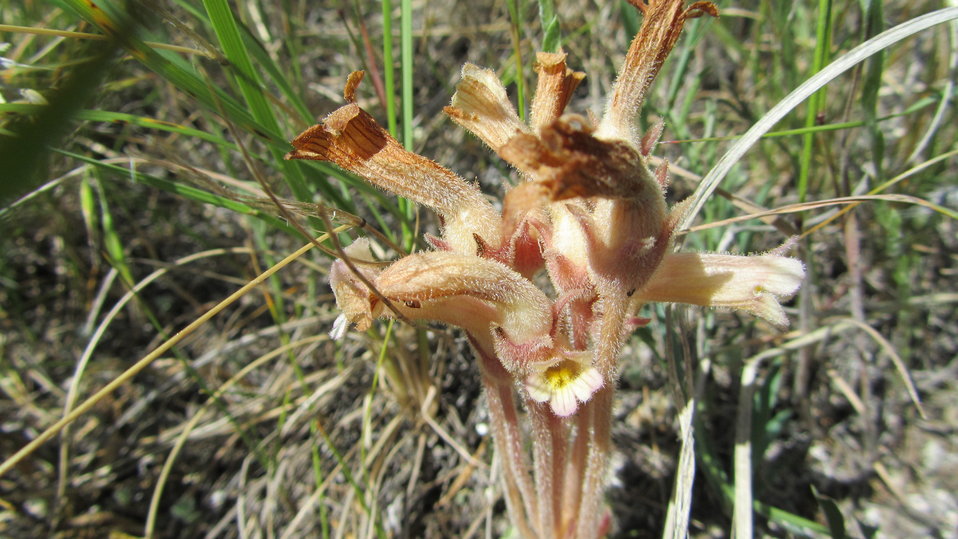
Clustered broomrape is a parasitic plant and grows attached to the roots of other plants. Since it gets all of its nutrients from the host plant it lacks leaves and chlorophyll. (Orobanche fasciculata)